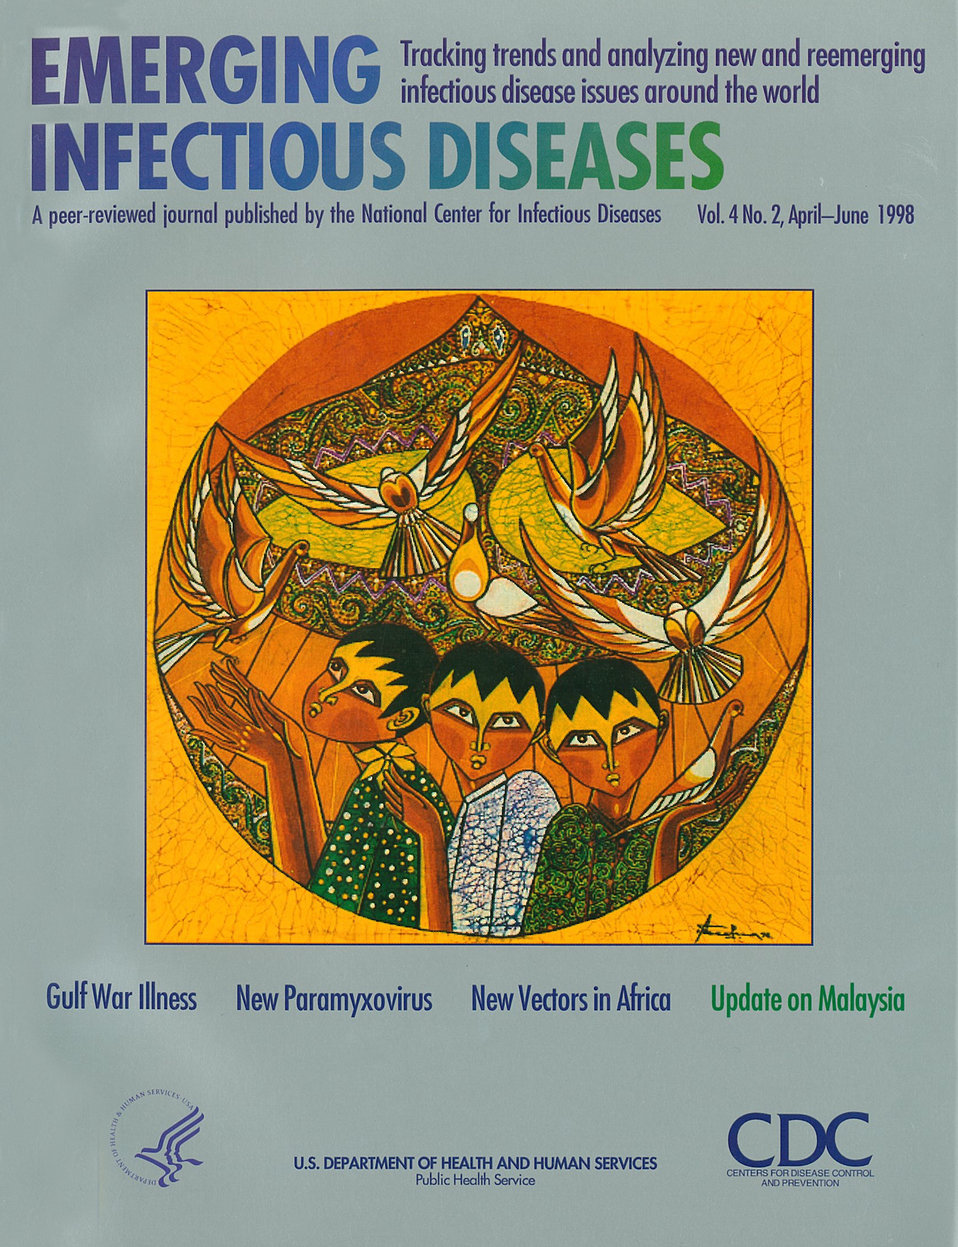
Emerging Infectious Diseases (EID) cover artwork for Volume 4, Number 2, April-June 1998 issue.